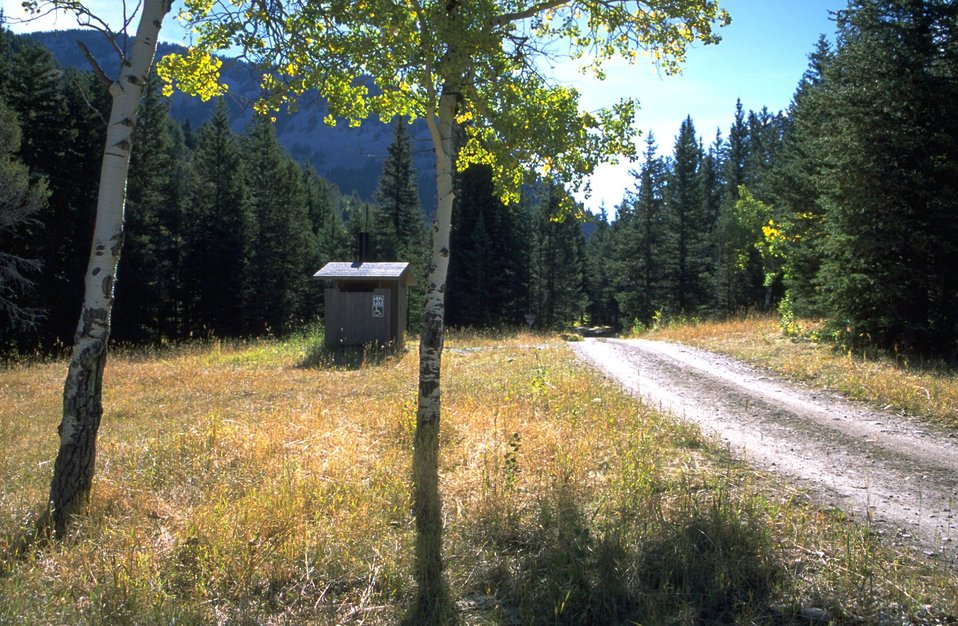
Outhouse at East Fork